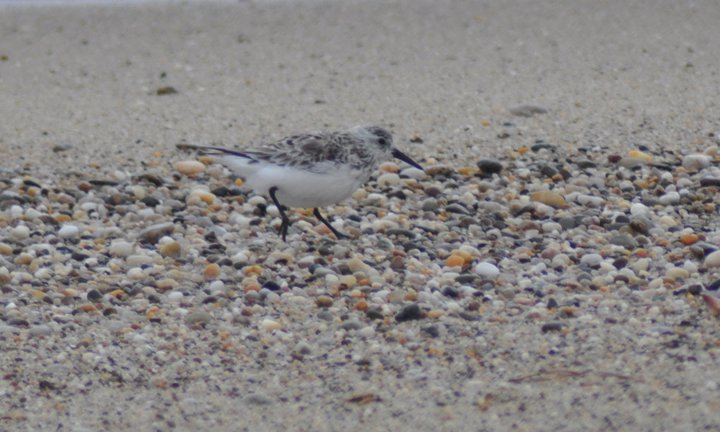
Sanderling

A sanderling at the Nantucket National Wildlife Refuge, MA.